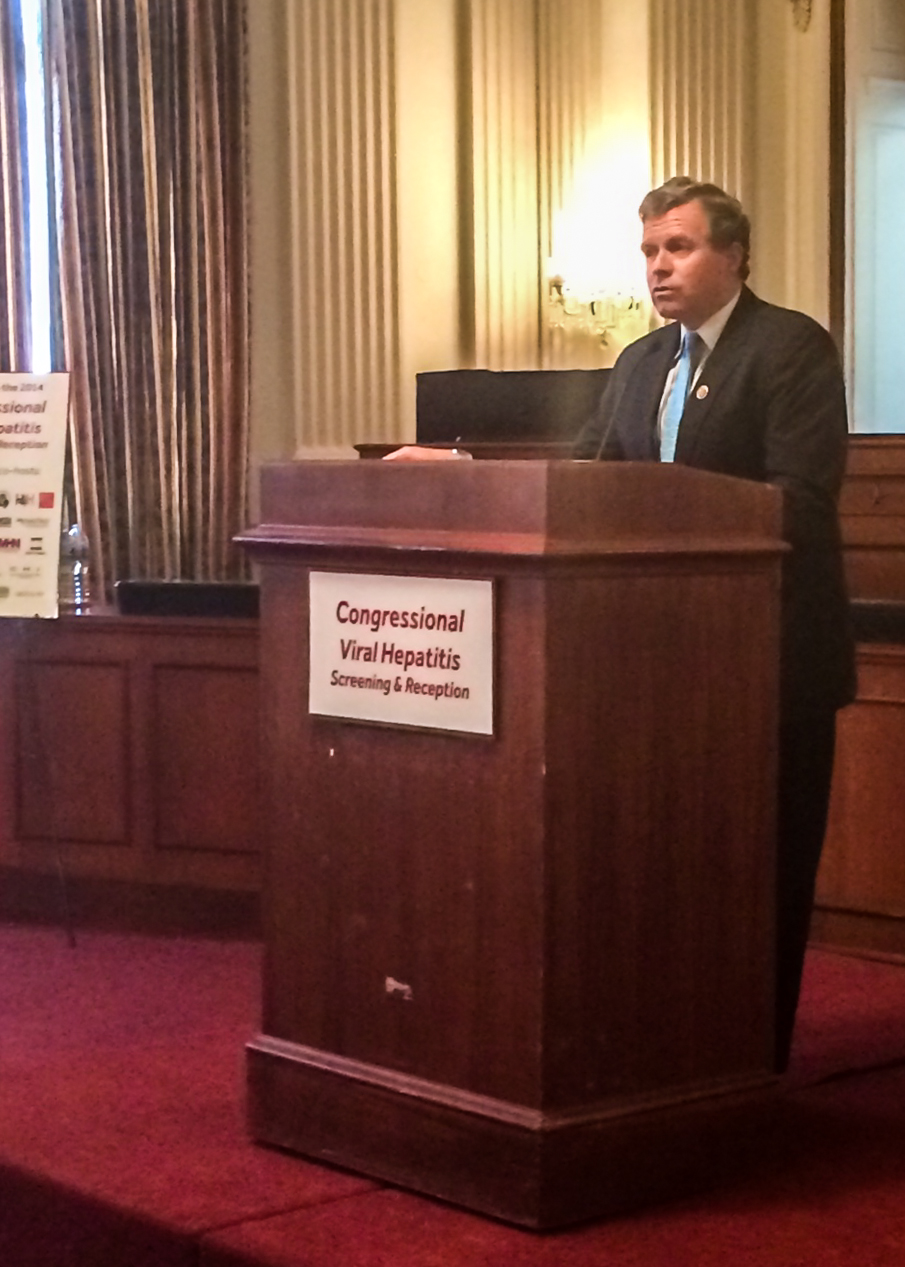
14 0519 HepTestingDay-6